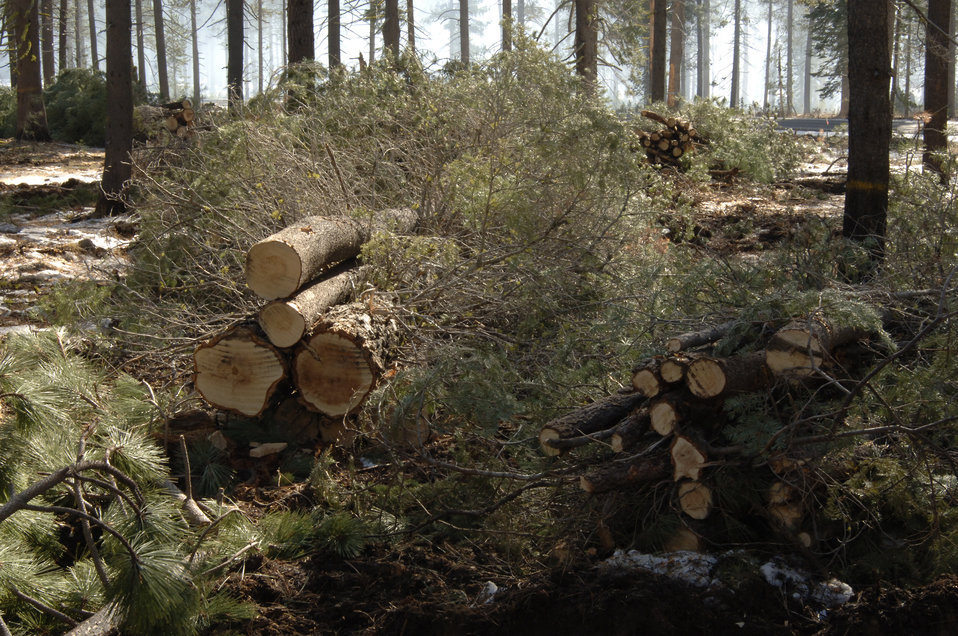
The U.S. Department of Agriculture (USDA) Forest Service (FS) is strongly committed to the management of the National Forests in an environmentally sound manner. The agency's top priority is to maintain and improve the health, diversity, and productivity of forest ecosystems for the enjoyment of current and future generations. Forest management includes guidance, administration, and support of the agency's forest products management and sales programs. Forest products include materials derived from a forest for commercial use such as lumber and paper, and also 'special forest products' such as medicinal herbs, fungi, edible fruits and nuts, and other natural products.